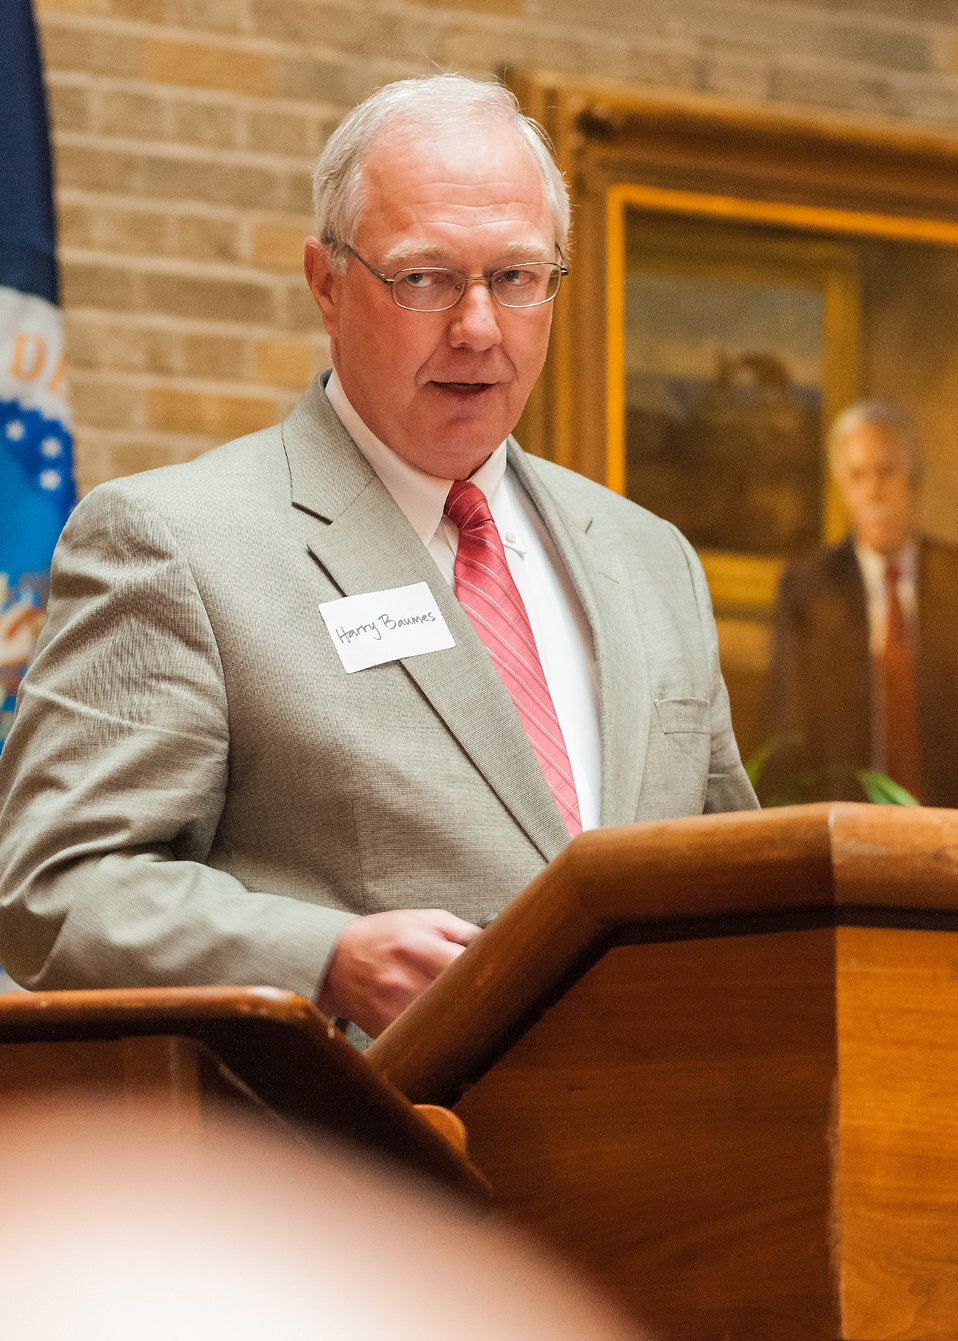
U.S. Department of Agriculture (USDA) Biomass Production Systems National Program Leader Dr. Harry Baumes discusses “from the Lab; to Farm, Field and Forest; to Fuels: An Overview of U.S. government bioenergy programs and how they interact at the U.S.-Israel Bio-Challenge Symposium at USDA in Washington, D.C. on Thursday, Apr. 18, 2013.